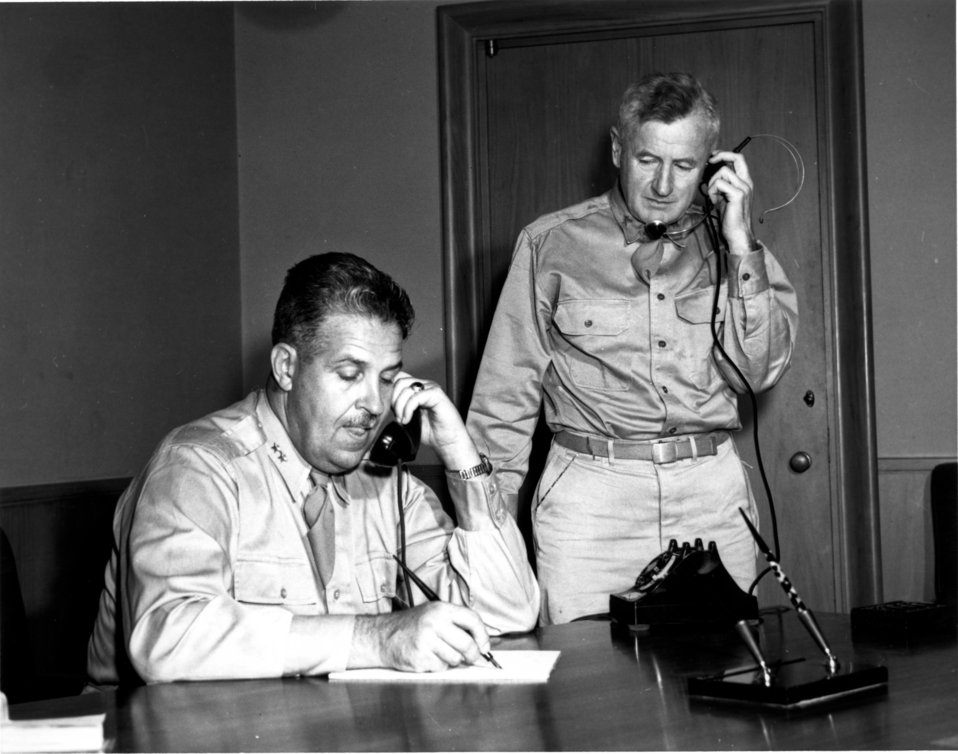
General Groves and General Ferrell at Oak Ridge